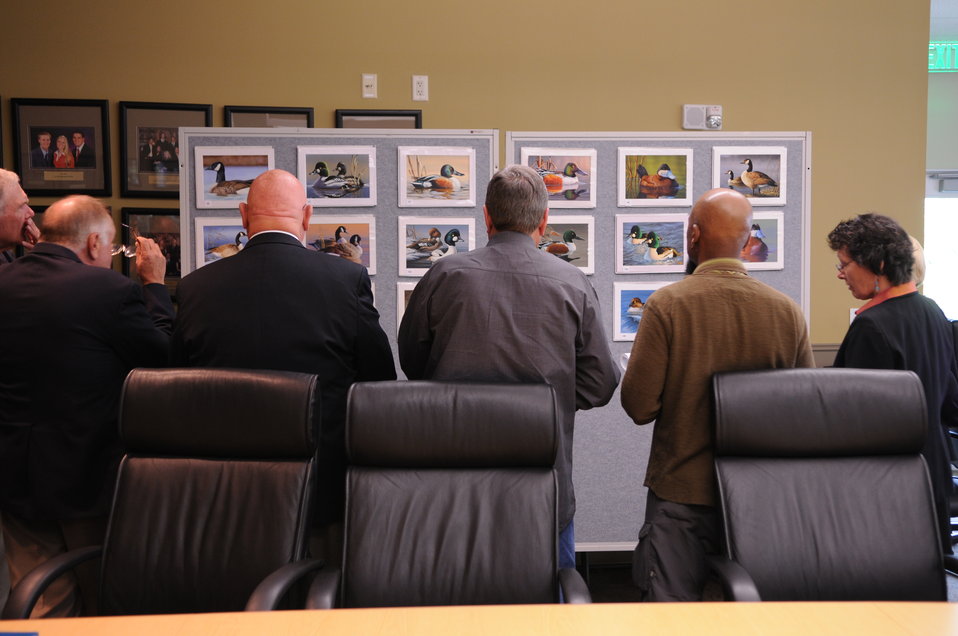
Judging

The U.S. Fish & Wildlife Service sponsored the 2012 Federal Duck Stamp Art Contest September 28 and 29 in Ogden, Utah, at Weber State University. A panel of five judges was responsible for choosing the art work used to design the 2013-2014 Migratory Bird Hunting and Conservation Stamp.